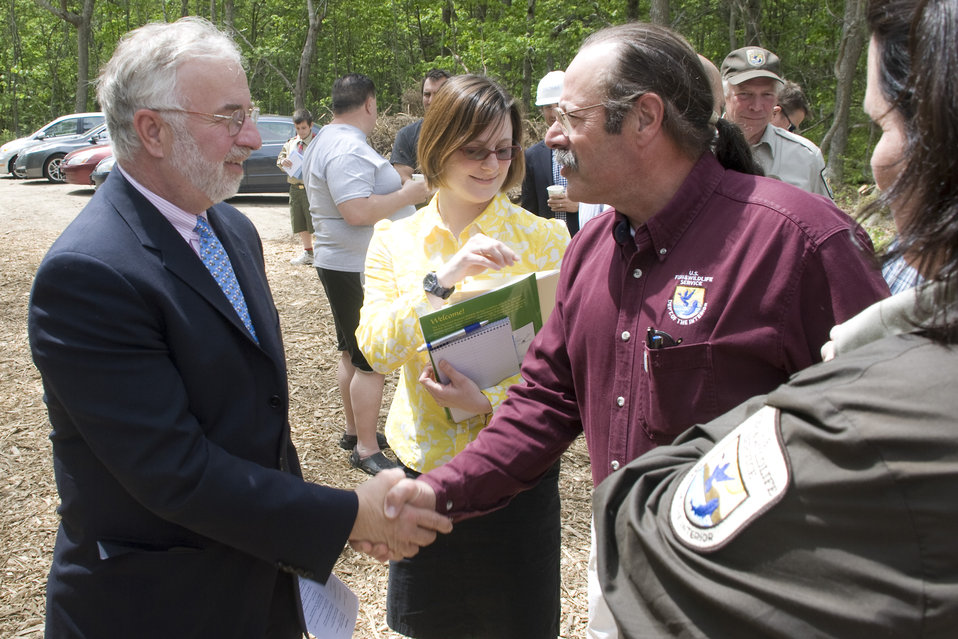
U.S. Congressman Tim Bishop and Northeast Region Refuge Chief Tony Léger